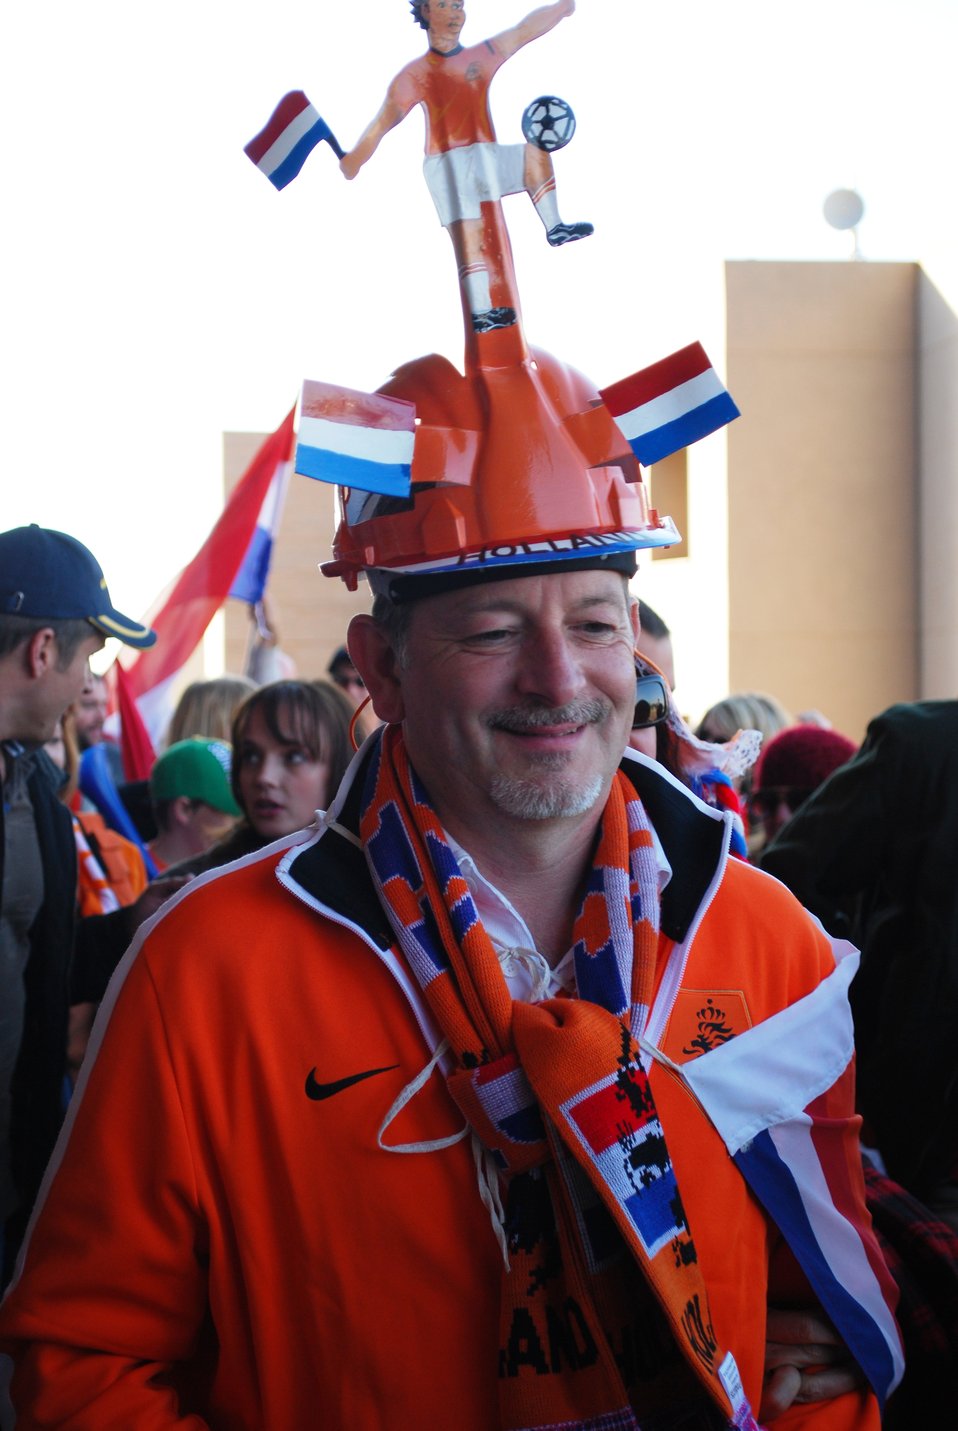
A Dutch Fan Shows His Pride

A Dutch fan wearing the bright orange of the team's jerseys and his country's flag shows off his regalia at the Netherlands vs. Denmark World Cup soccer match at Soccer City Stadium in Johannesburg, South Africa, on June 14, 2010.